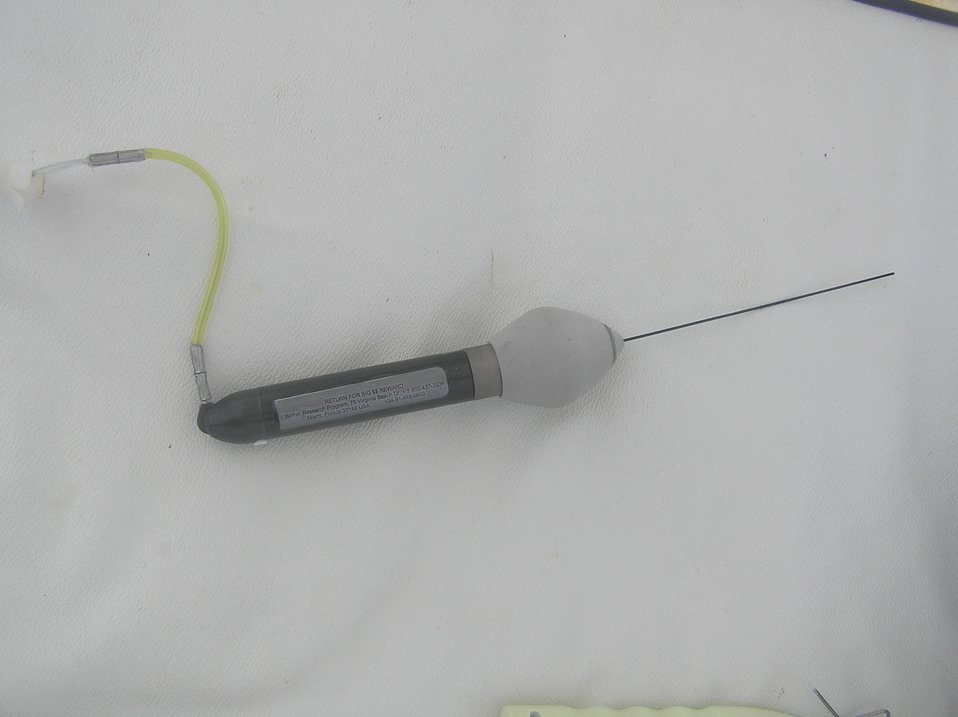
Tracking device enticing sportfishermen to return device with data intact